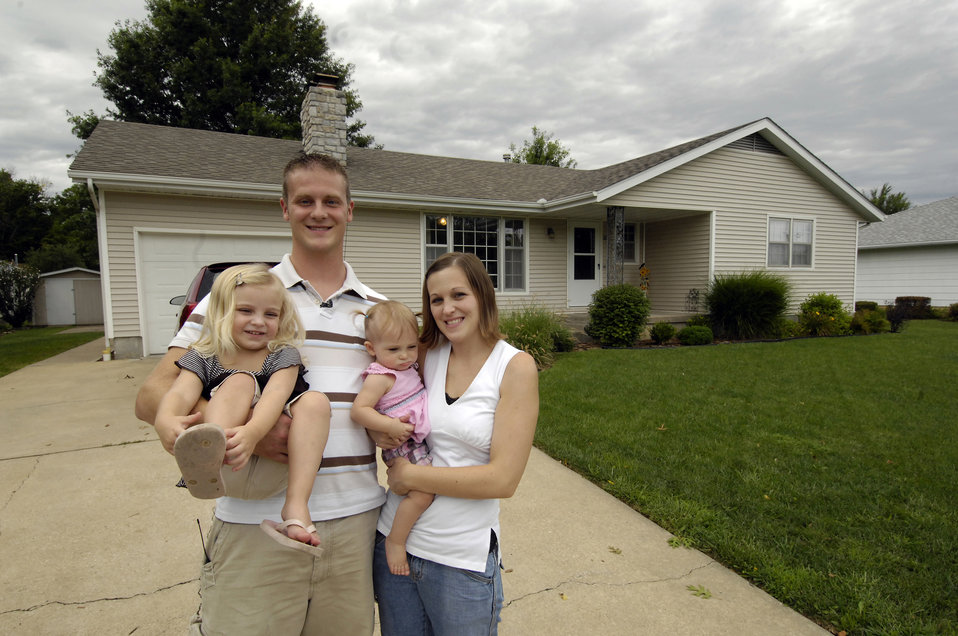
Christopher, Hope, Makenna and Natasha Goetz proudly stand in front of their home in Garnett, Kansas on August 18, 2009. The Goetz's were able to purchase their home with money from the U. S. Department of Agriculture (USDA) Rural Development (RD) loan guarantee program. The money from the submitting lender and originating lender has guaranteed many loans in Kansas from funding available through the American Recovery and Reinvestment Act of 2009 (ARRA).